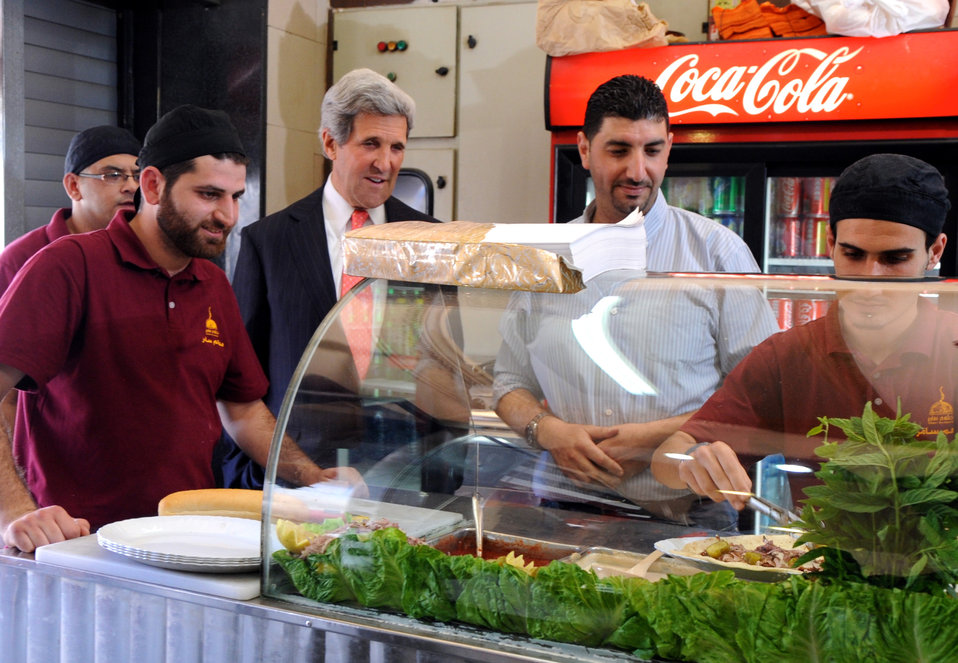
Secretary Kerry Watches His Shawarma Sandwich Being Prepared

U.S. Secretary of State John Kerry watches his shawarma sandwich being prepared at a shop in Ramallah on May 23, 2013.